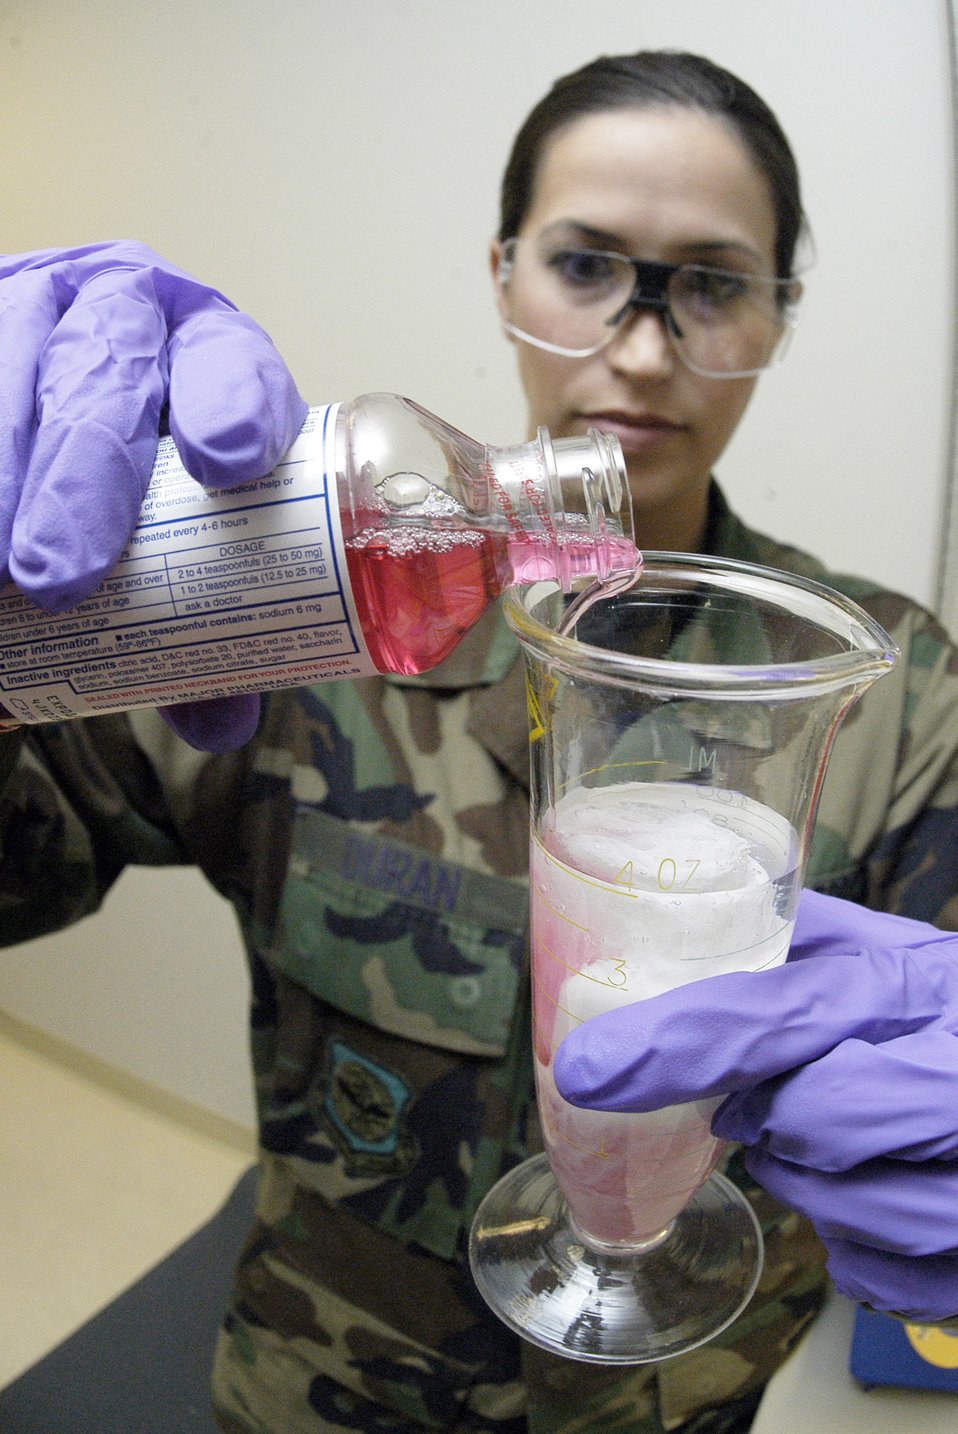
Mixin' it up

ANDREWS AIR FORCE BASE, Md. (AFPN) -- Senior Airman Mandy Duran mixes a medication compound for a patient. The medication is used to soothe sore throats or cold sores. Although most medications come pre-mixed and packaged, there are some occasions when pharmacists are required to compound medications. Airman Duran is a pharmacy technician with the 89th Medical Support Squadron.